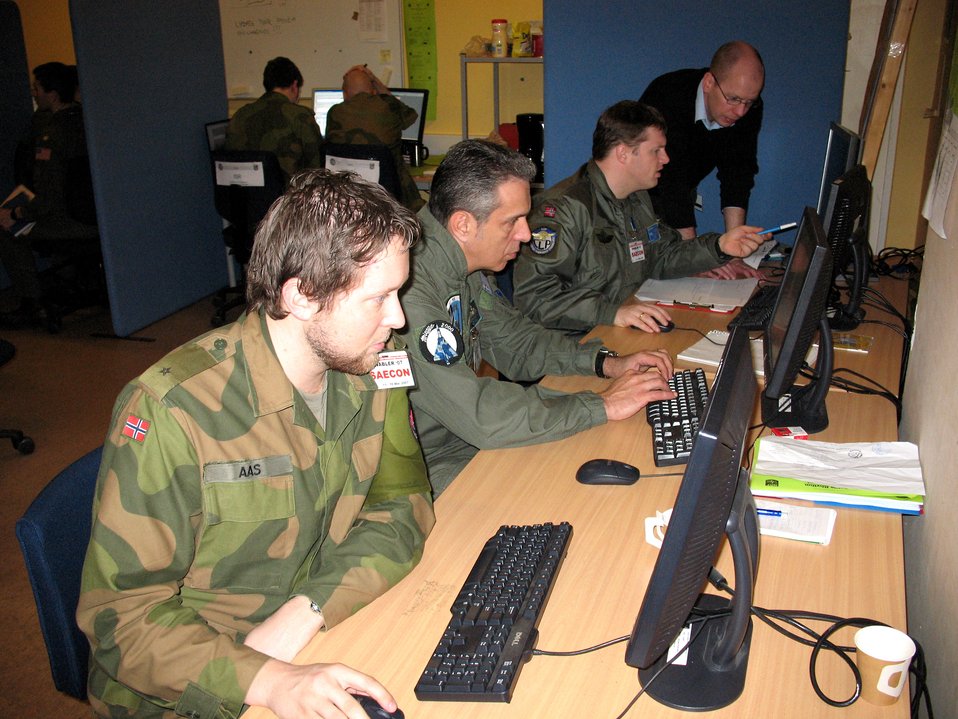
Joint Warfare Center tests new tools during exercise

Joint Warfare Center staff members participate in Exercise Enabler 2007, a virtual exercise that tested new tools for future JWC exercises March 28 at Ramstein Air Base, Germany. The exercise prepares NATO battle staff members for deployments to Afghanistan.